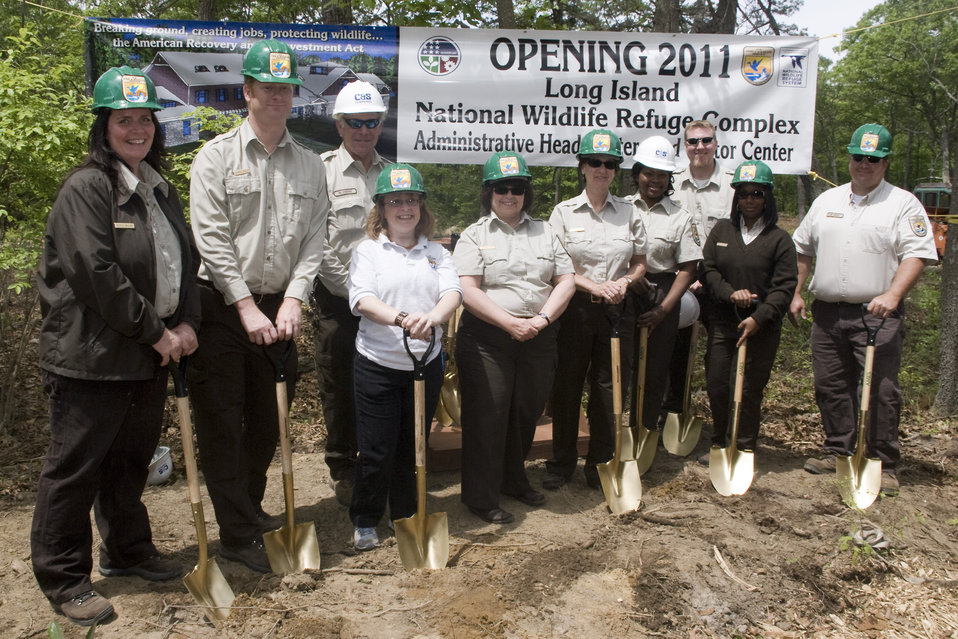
Long Island Refuge Complex Staff